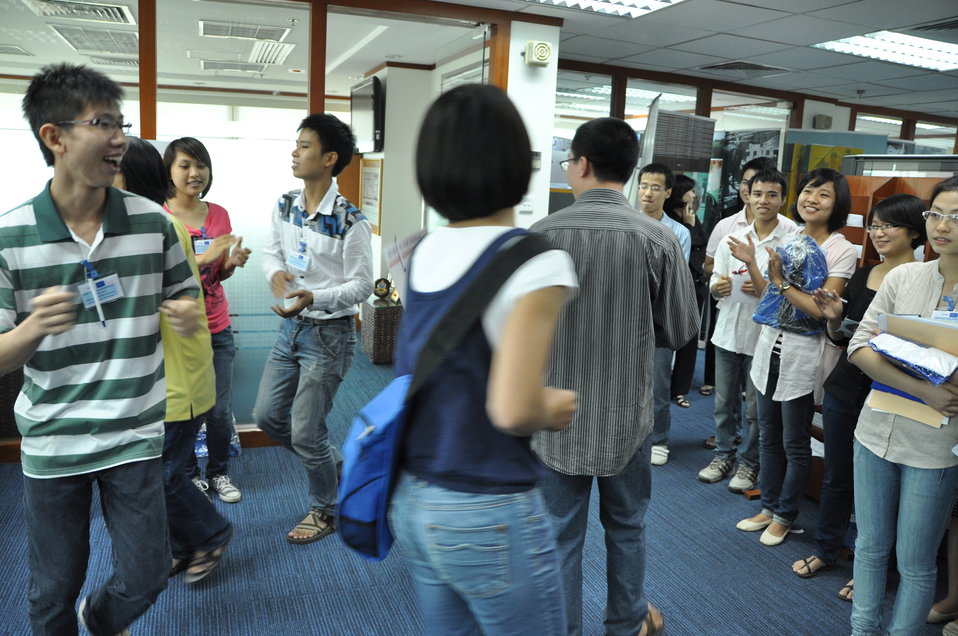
USAID Vietnam Open House, November 3, 2011